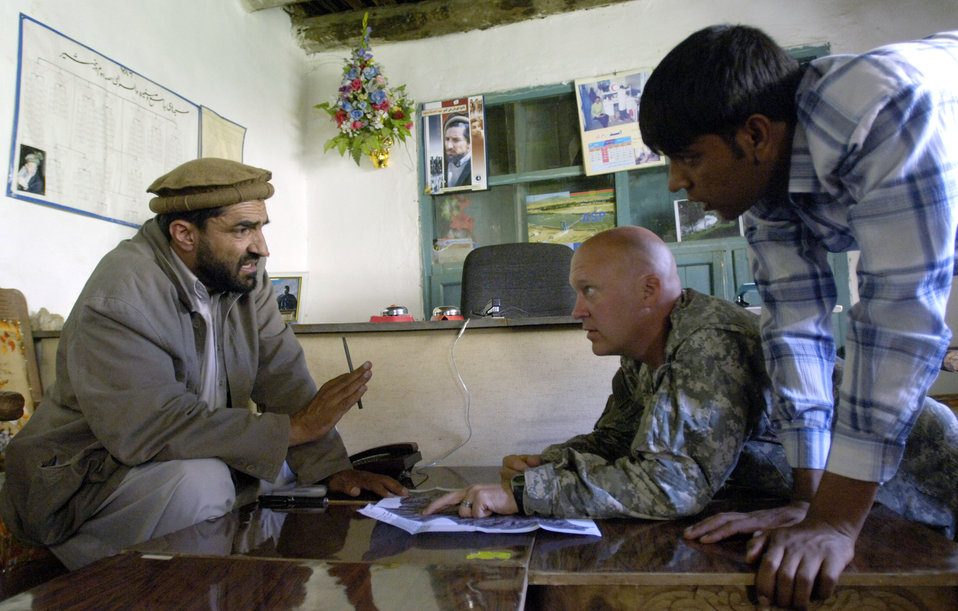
Panjshir PRT

Lt. Col. Christopher Luedtke meets wth Dara district manager Malam Sorab Aug. 5 to discuss infrastructure development in the district. Colonel Luedtke, commander of the Panjshir Provincial Reconstruction Team, and his team members traveled to the Dara district of Panjshir province, Afghanistan, to meet with district officials. Colonel Luedtke is deployed from Hill Air Force Base, Utah. The Panjshir PRT stood up in 2005 and is directed by Ben Lowenthal from the U.S. State Department. Housed at Forward Operating Base Lion in the Hindu Kush mountains. The 40-member team interfaces with a population of approximately 300,000 Afghans spread across 1,393 square miles in six districts.